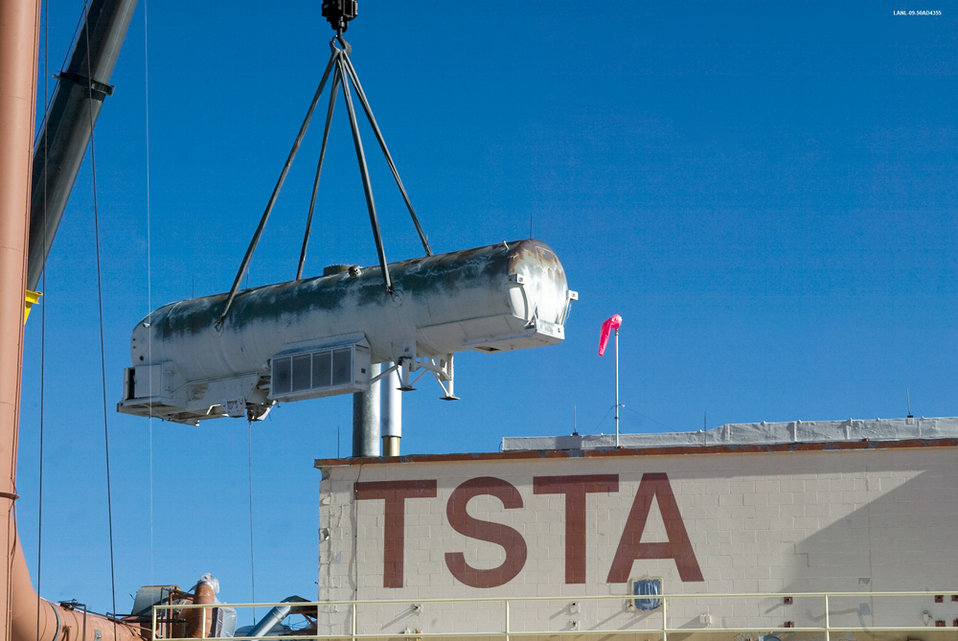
Recovery Act work at LANL